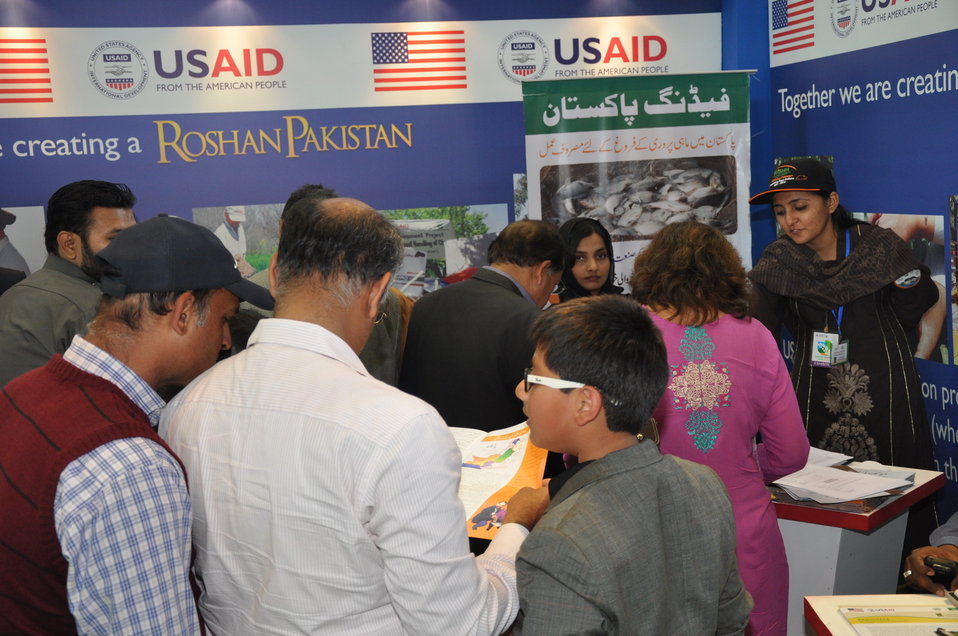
FEEDing Pakisan

Crowd at USDA booth attracted visitor to get information about Tilapia farming from Female Fresh Graduates